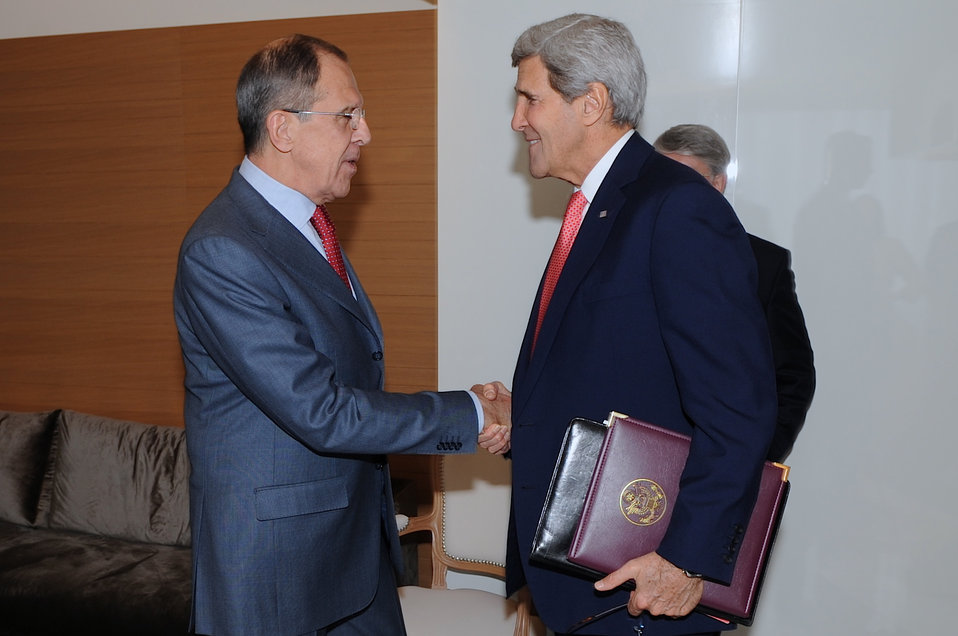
Secretary Kerry Shakes Hands With Russian Foreign Minister Lavrov in Geneva

U.S. Secretary of State John Kerry shakes hands with Russian Foreign Minister Sergey Lavrov before a bilateral meeting on the margins of talks focused on Iran's nuclear capabilities, Geneva, Switzerland, November 23, 2013.